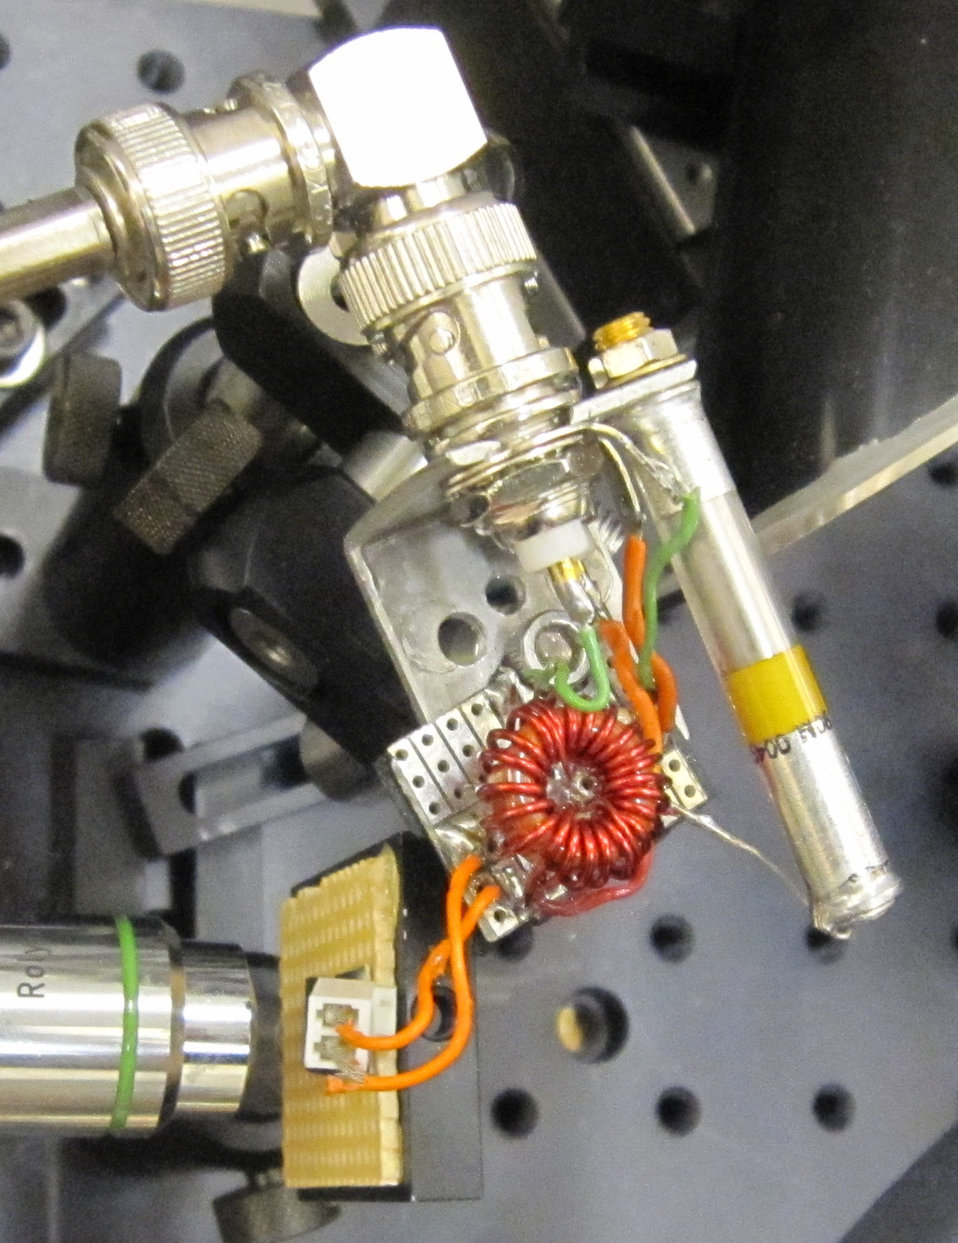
Radiation Instrument

JILA instrument for generating terahertz radiation. Ultrafast pulses of near-infrared laser light enter through the lens at left, striking a semiconductor wafer studded with electrodes (transparent square barely visible under the white box connected to orange wires) bathed in an oscillating electric field. The light dislodges electrons, which accelerate in the electric field and emit waves of terahertz radiation. The radiation bounces off the reflective dishes at the bottom and top of the photo and hits the circular detector on the right.